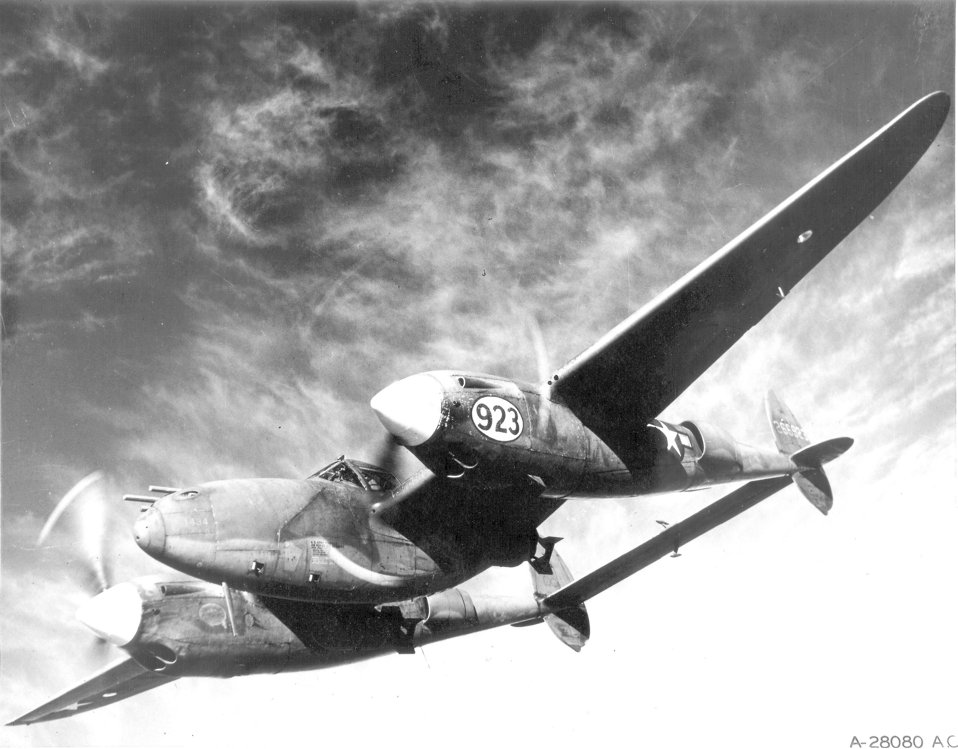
P-38 Lightning

1940's -- Barely visible beneath the wings of a Lockheed P-38 Lightning are the deadly bombs with which this multi-purpose plane can blast enemy troops, ships and gun emplacements. At the Army Air Forces Tactical Center in Orlando, Fla., the P-38 demonstrated its ability to carry bomb pay loads up to 2,000 pounds.